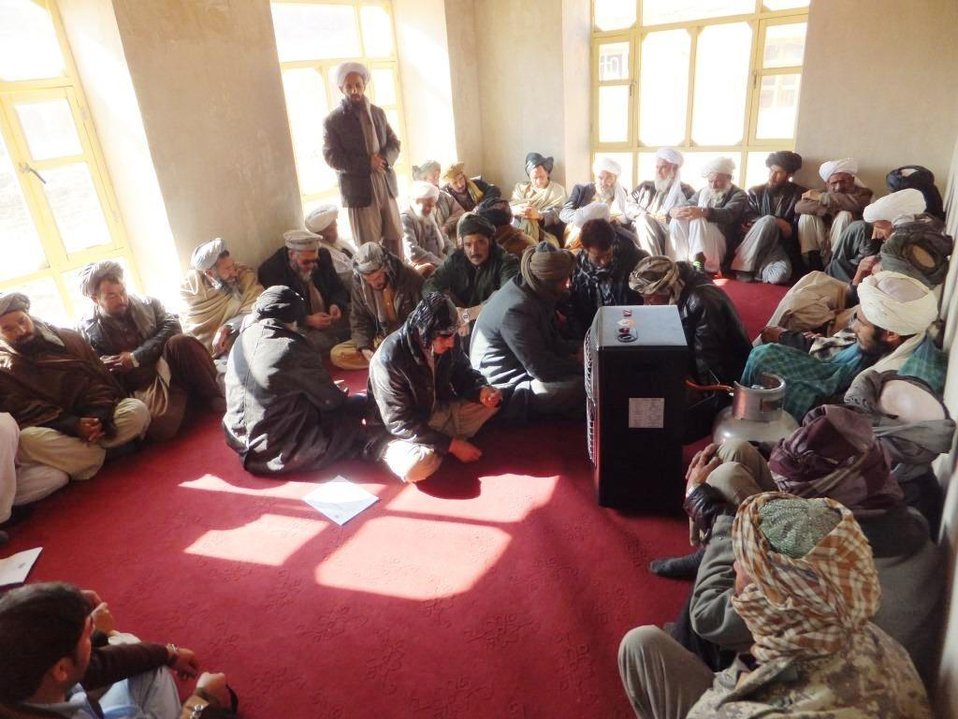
The Shahrak Acting District Governor held a meeting with 35 district Ulema and elders on November 26